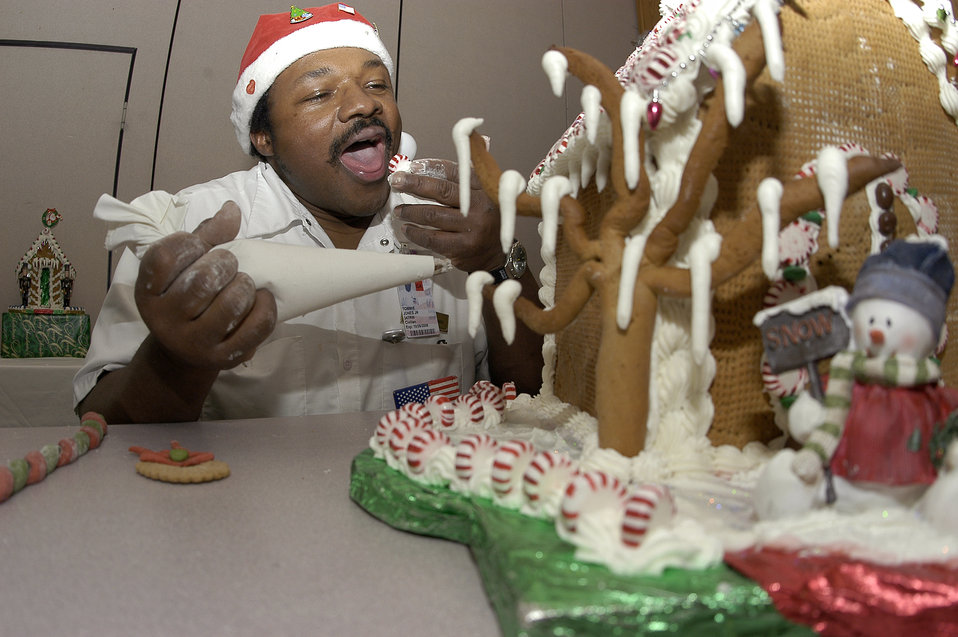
Gingerbread King builds sweet memories

U.S. AIR FORCE ACADEMY, Colo. -- Chef Tommie Jones sometimes follows a